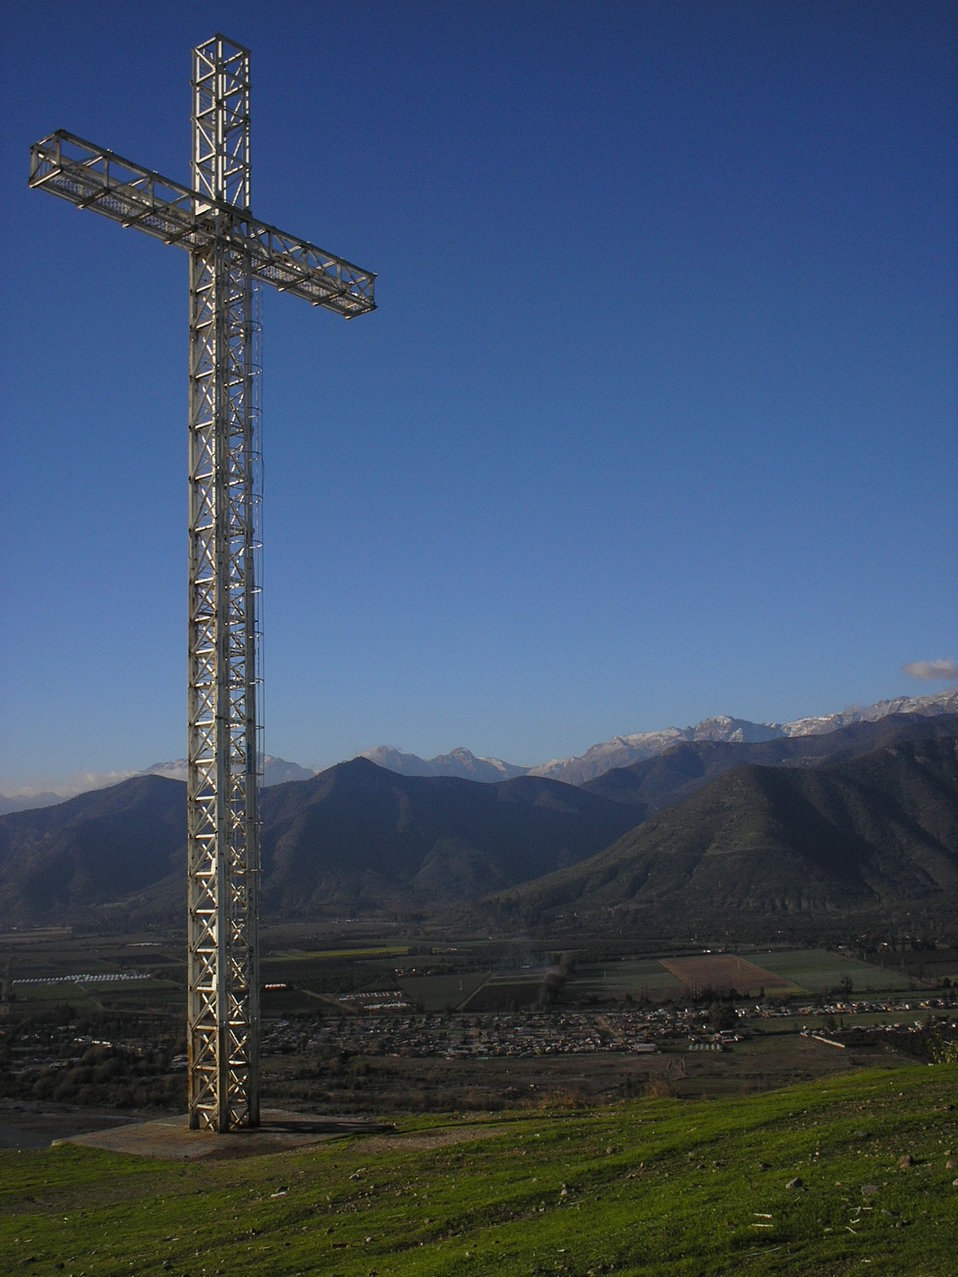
La Calera Cross